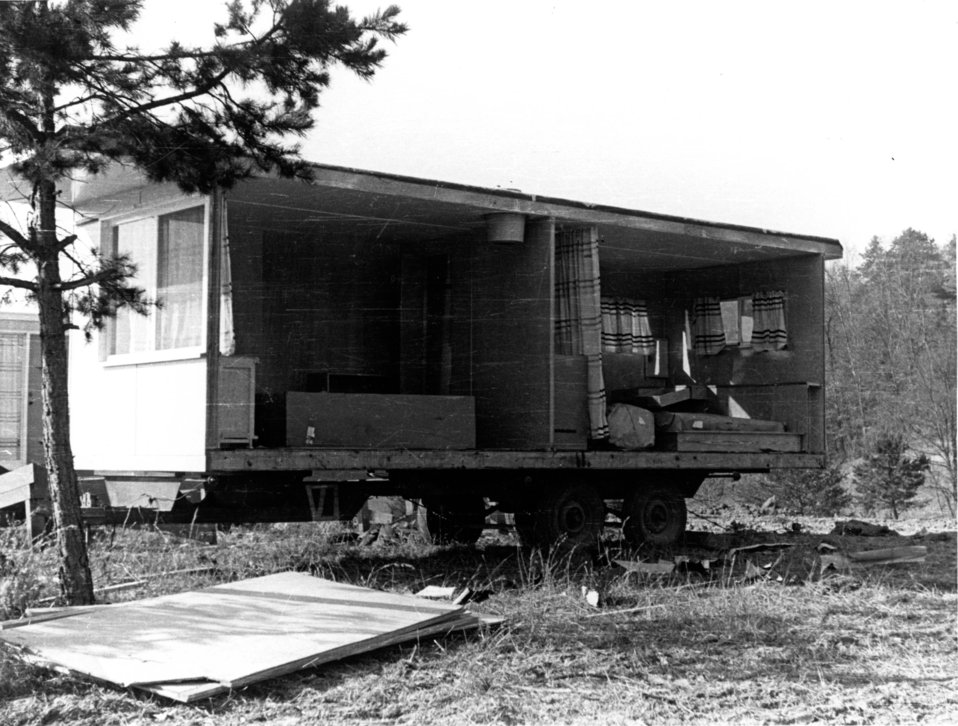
Housing at Oak Ridge